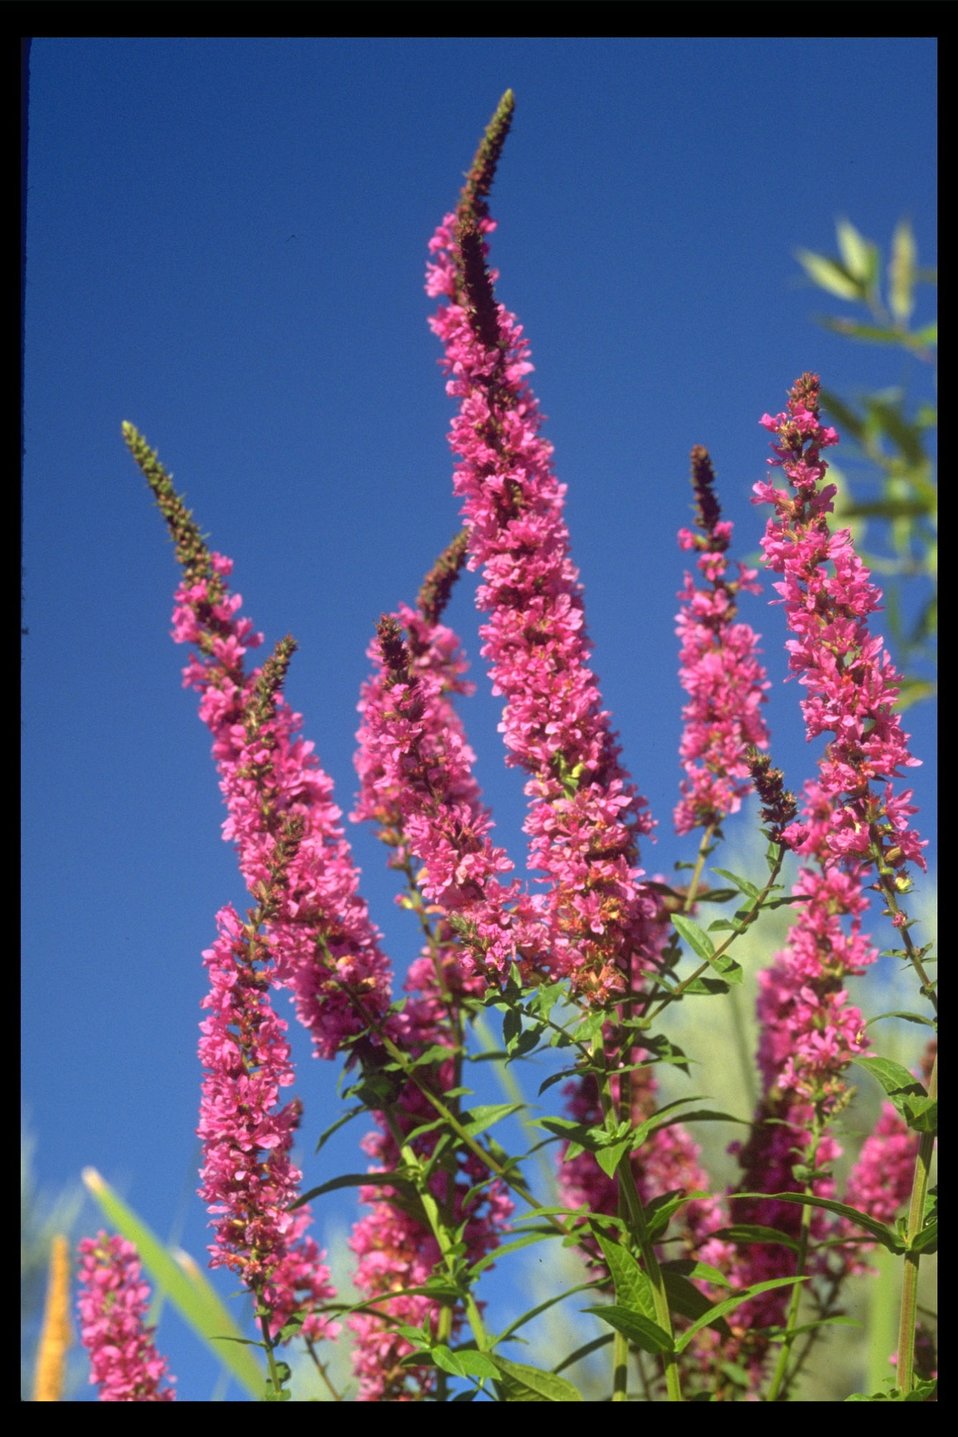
Purple Loosestrife (Lythrum salicaria), a noxious weed, found at city park in Medford at Springbrook and Spring Street.